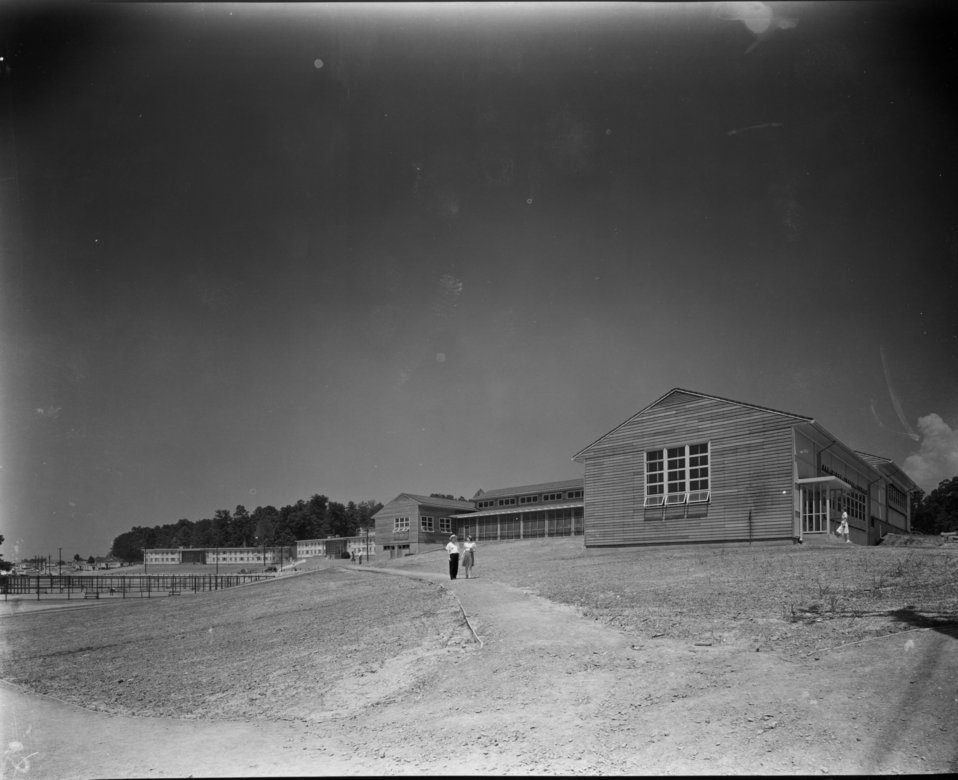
Services at Oak Ridge